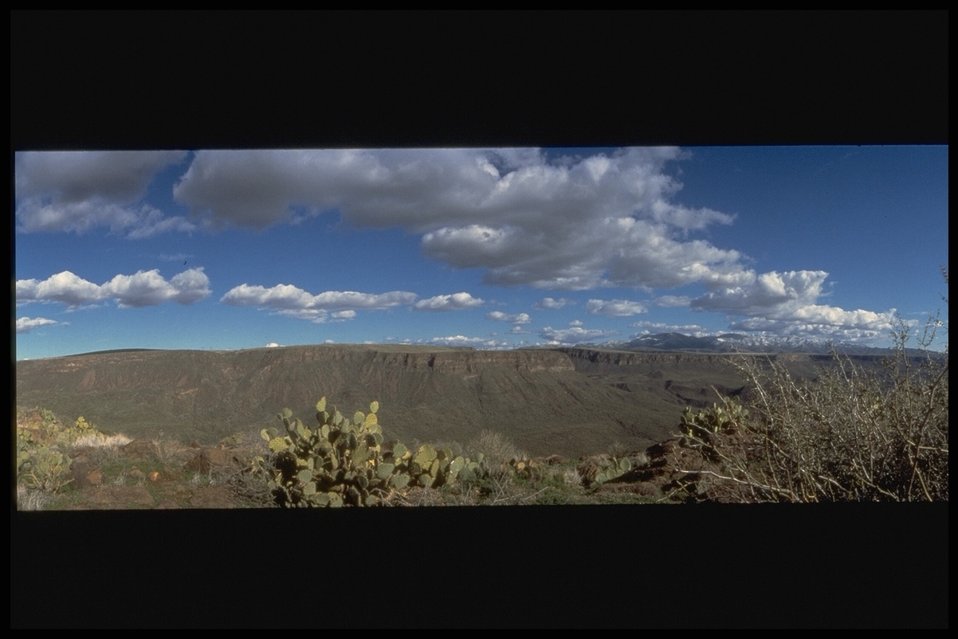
The Agua Fria River Canyon below a cloud peppered Arizona sky. Prickly pear cacti border the rim of the canyon.